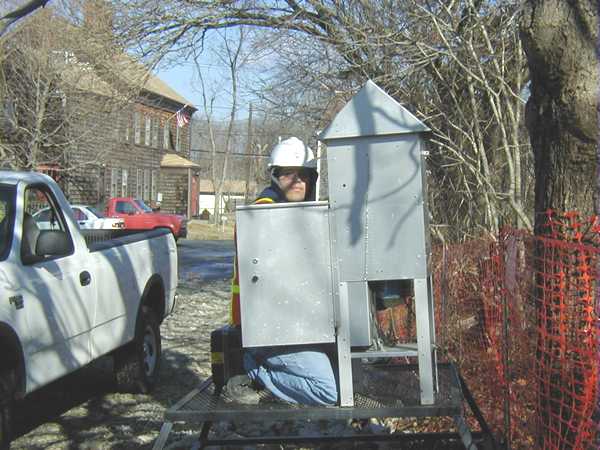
February 2001, Installing air monitoring equipment

To ensure the best possible data is used for cleanup decisions, EPA has collected a variety of information around the cleanup site.

Despite the fact that airborne PCBs are not the primary cause for concern at this site, compared to consumption of locally caught seafood and dermal contact with shoreline sediment, EPA still collects air monitoring data each year to analyze the levels in the environment and ensure that the cleanup is progressing safely.